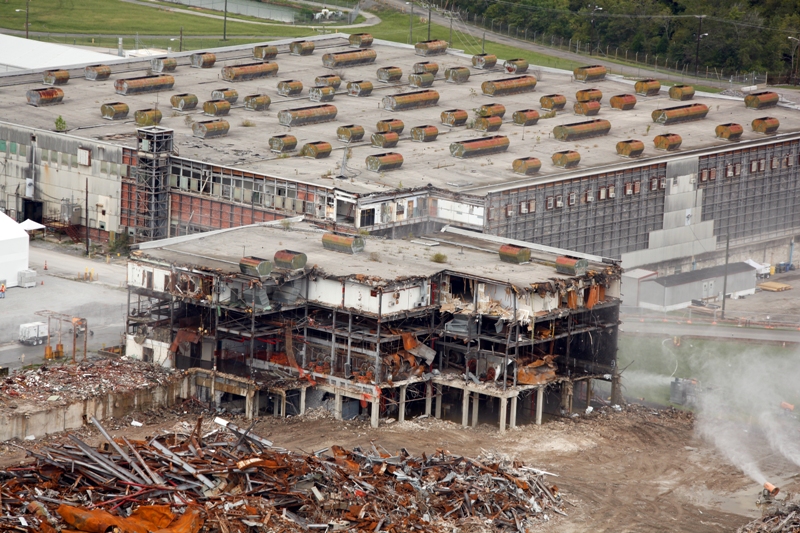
K-25 remaining east wing

September, 2012

Workers demolish the final unit of the non-technetium contaminated portion of K-25’s east wing.